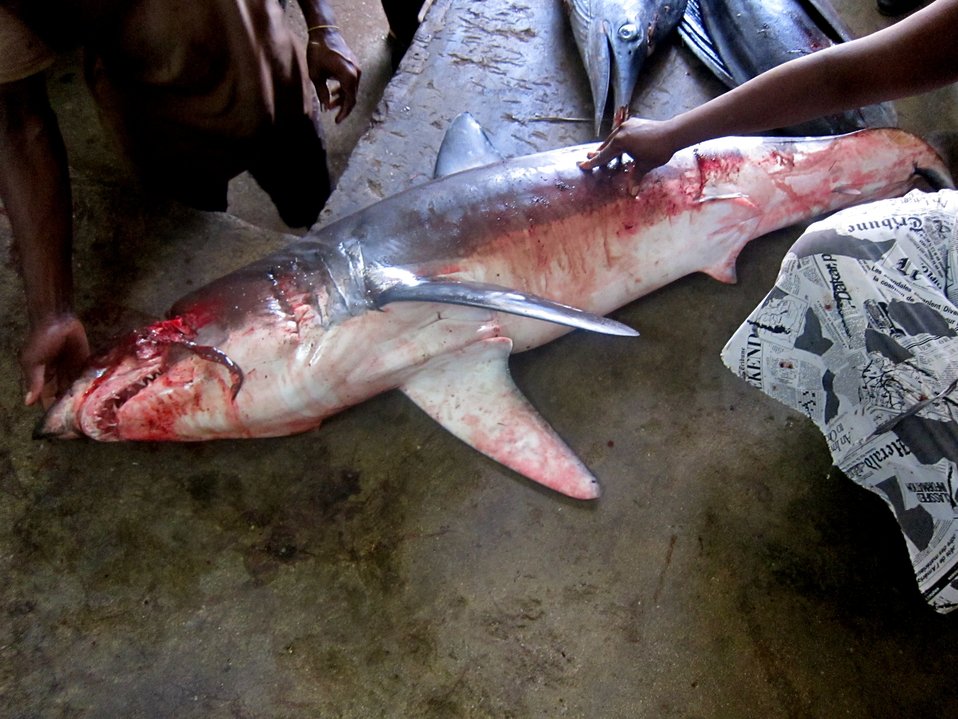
Shark being prepared for Sao Tomean market